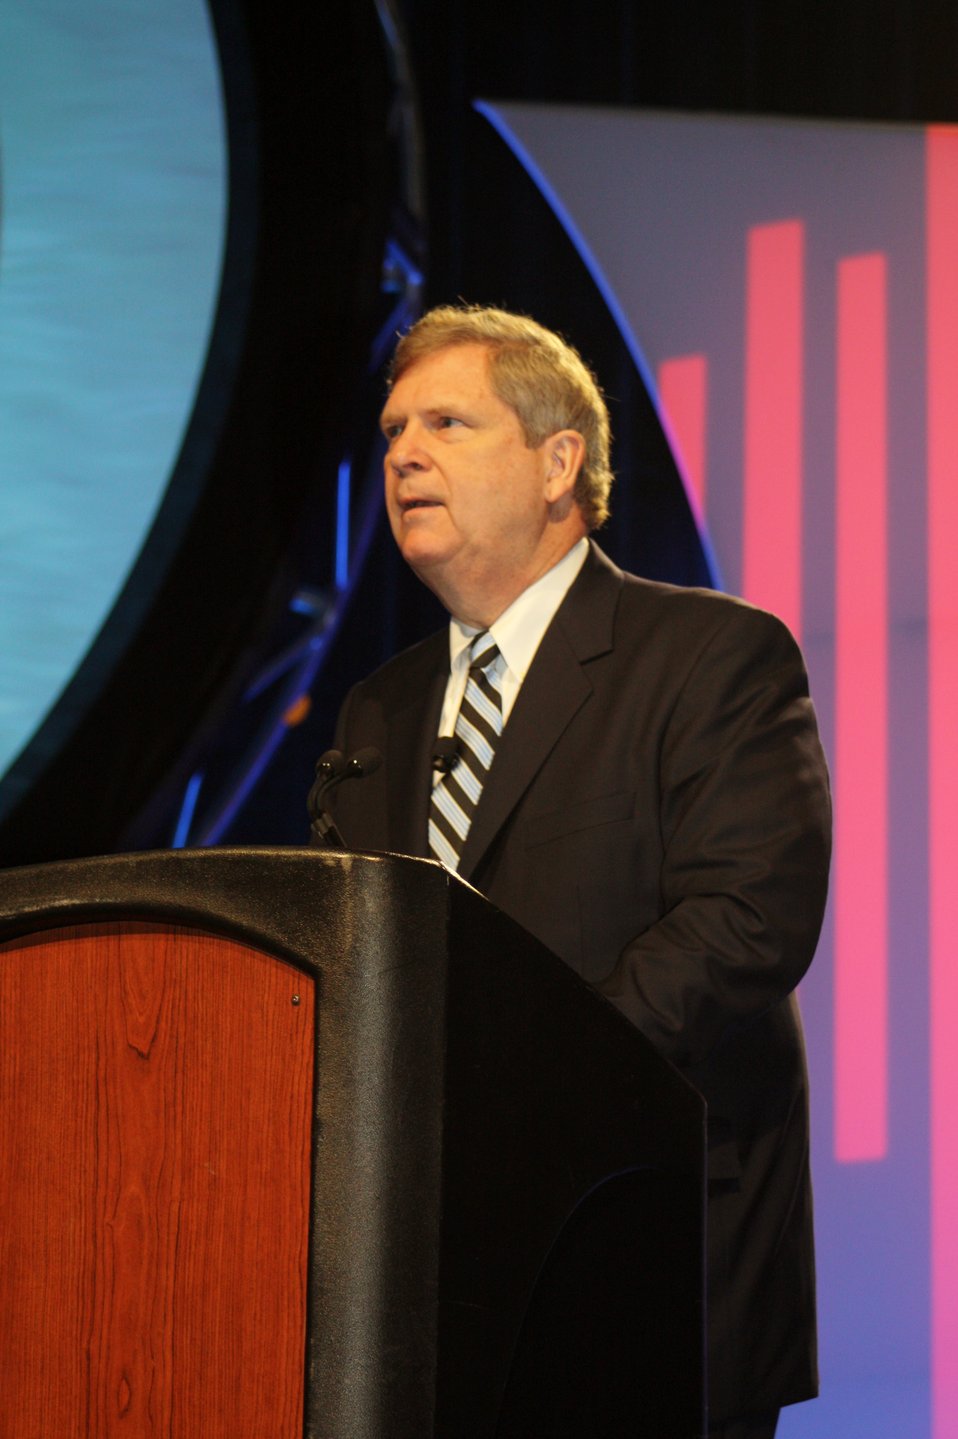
Agriculture Secretary Tom Vilsack discuses the Agricultural Act of 2014 at the Commodity Classic general session in San Antonio, TX on Friday, Feb. 28, 2014. The annual Commodity Classic is open to all corn, soybean, wheat and sorghum growers, member associations, agribusiness, and farm media. It is a farmer-focused and farmer-led convention and trade show.